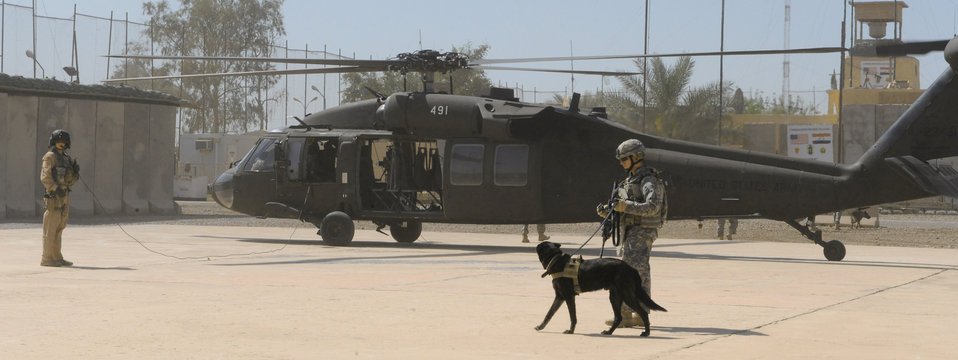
Man's best friend

Senior Airman Ted Carlson egresses a helicopter with his military working dog, Dutchy, during training April 21 at Joint Base Balad, Iraq. The training teaches the team how to safely and properly enter and exit aircraft, and prepares them for future air-assault missions. Airman Carlson is a 332nd Security Forces Group military working dog handler deployed from Moody Air Force Base, Ga. He is a native of Rochester, N.Y.